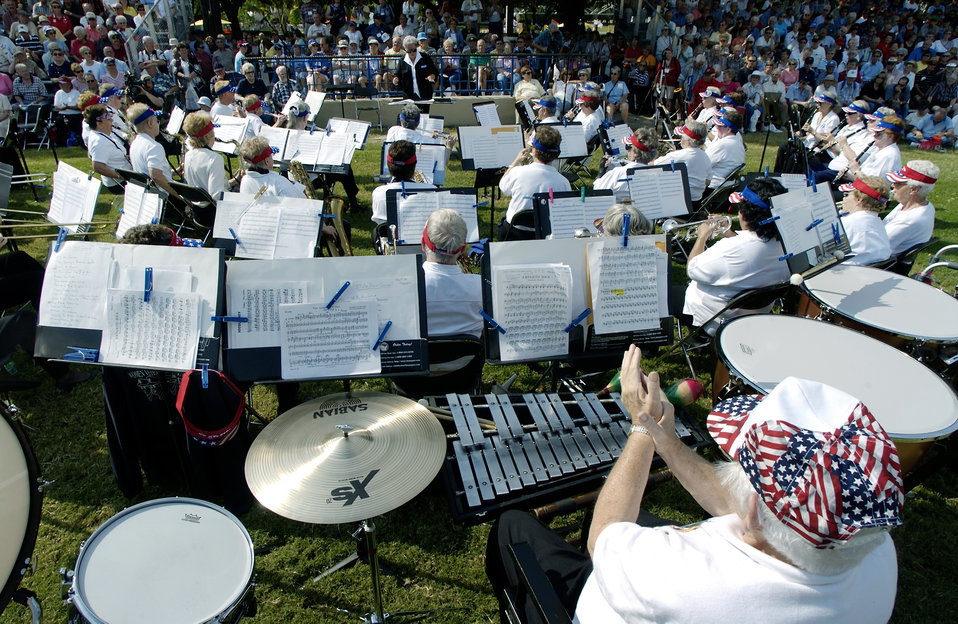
WAF Band still making music

DALLAS -- About 800 people at the Texas State Fair here listened to the music of the former U.S. Air Force Women in the Air Force Band. The band, in existence from 1951 to 1961, performed during a reunion of 54 members of the 235 women who comprised the only female band in Air Force history.